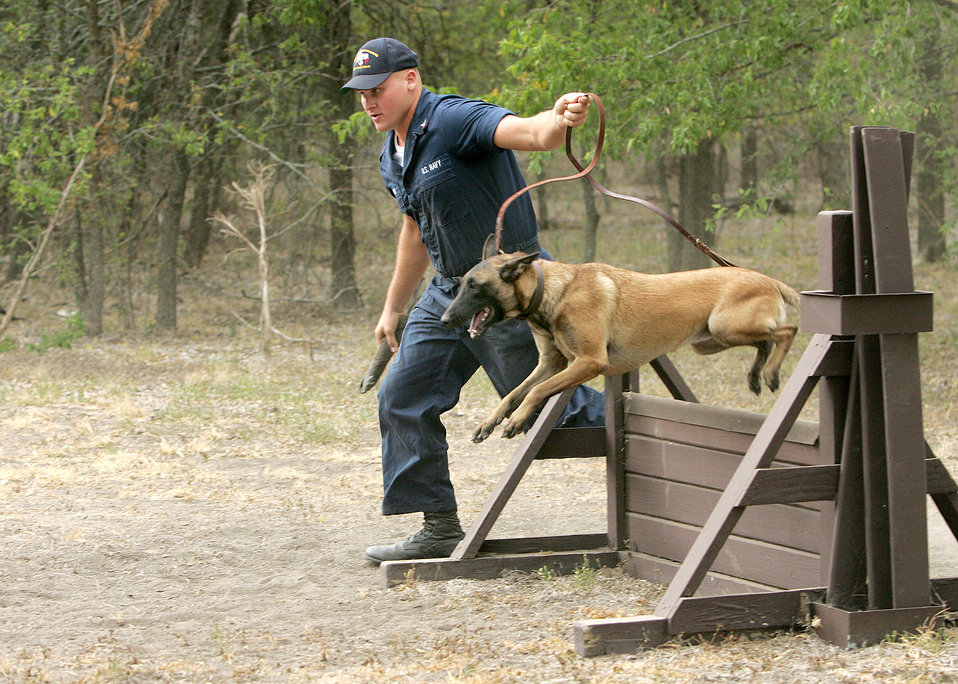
Total Force MWD training

Master At Arms 2nd Class David Nerling guides his military working dog Vvalerie over a hurdle during basic obedience training at Lackland Air Force Base, Texas, Aug. 29. MA2 Nerling is a Navy military working dog trainer at Lackland and works jointly with Air Force, Army and Marine trainers.